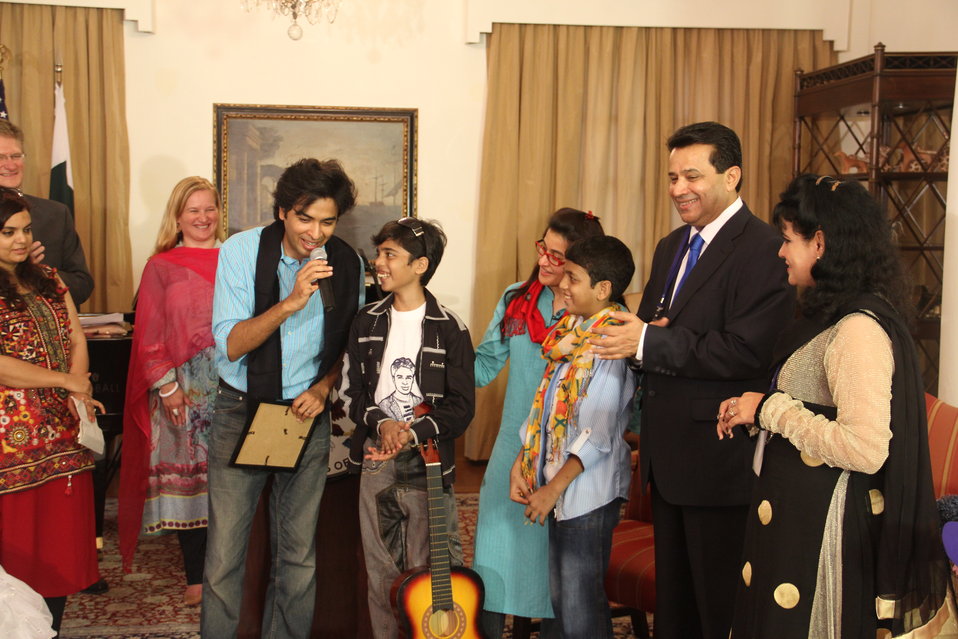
Make-A-Wish

Karachi, July 27, 2011 - Famous Pakistani singer Shahzad Roy shares a song with fifteen year-old Mohammad Anas at the old residence of the U.S. Consul General. Muhammad Anas, who is suffering from blood cancer, wished to meet his favorite celebrity, Shahzad Roy. With a grant from USAID, Make-A-Wish Pakistan will grant the wishes of 55 children.